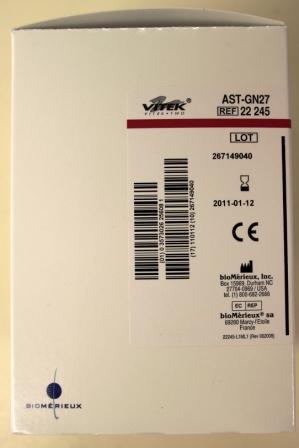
RECALLED - 2 Gram Negative Susceptibility Cards containing the antibiotic Piperacillin/Tazobactam

April 8, 2011 - Product Recall - bioMérieux, Inc. Issues Urgent Expanded Product Recall for VITEK® 2
Piperacillin/Tazobactam Test on Gram Negative Susceptibility Cards.